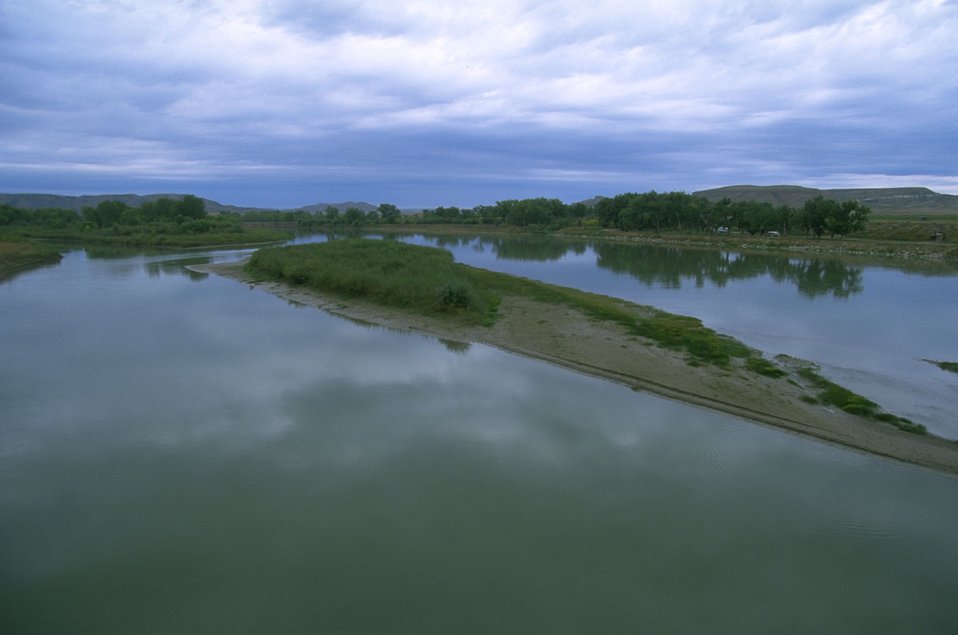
Judith Landing along Upper Missouri National Wild and Scenic River